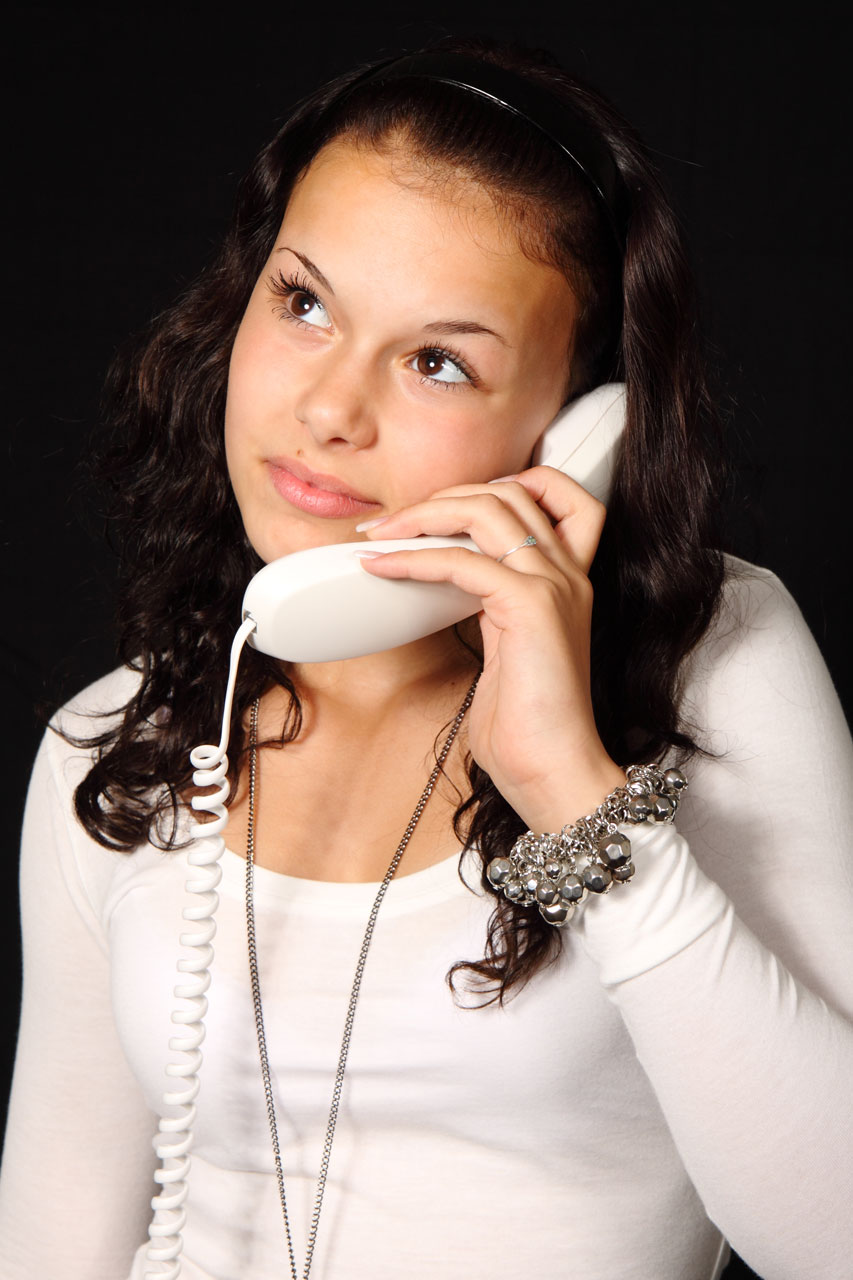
Woman listening on phone

Young woman listening on phone.